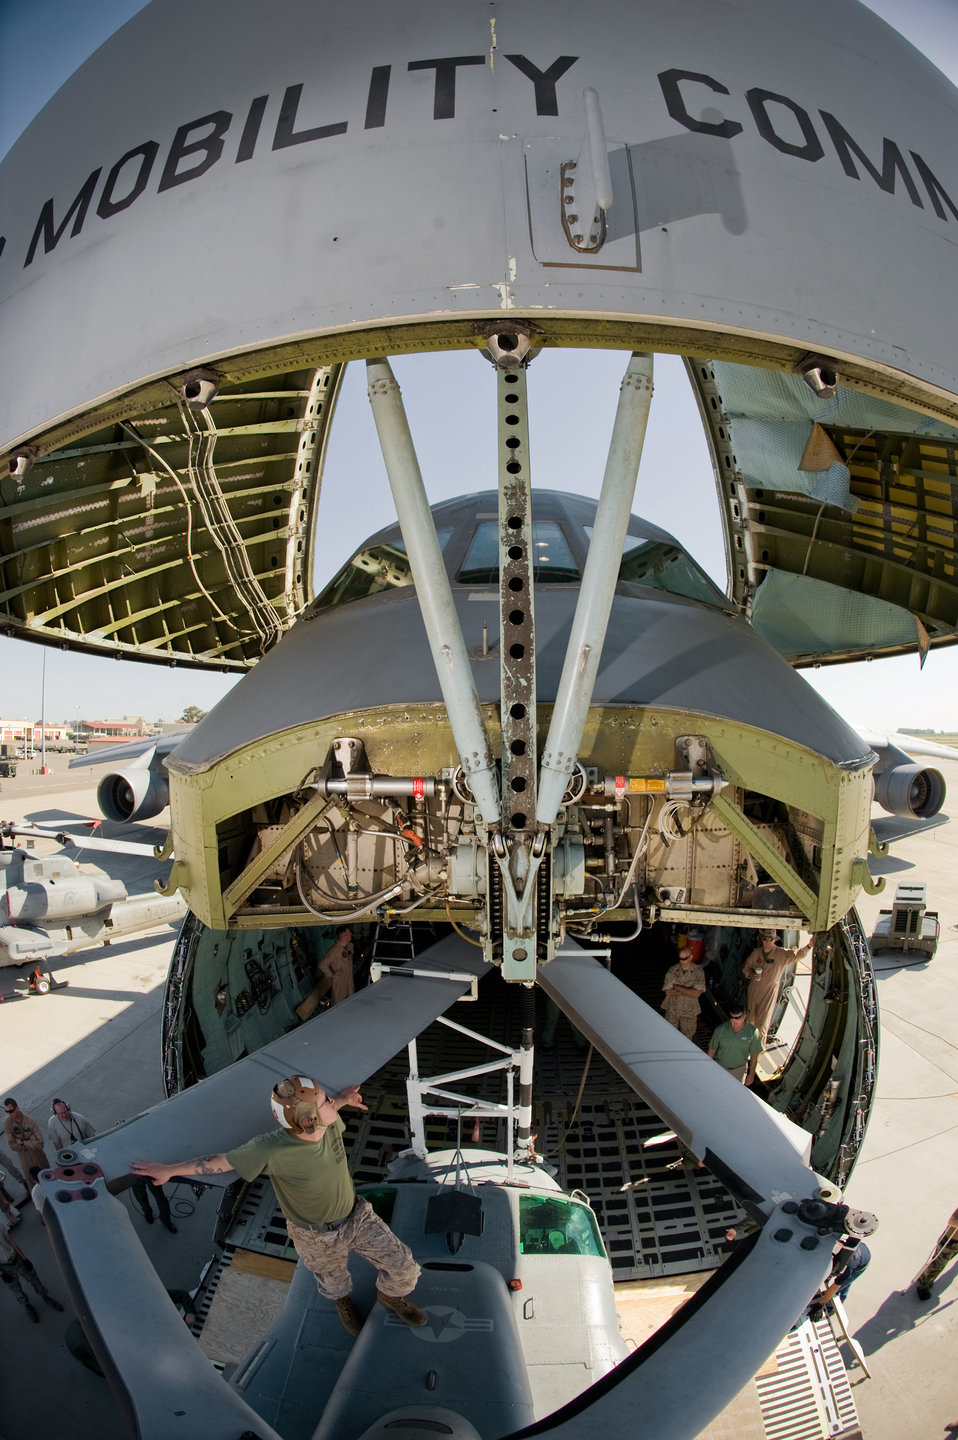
Open wide

Marine Sgt. Destin Waldron is the top-side spotter on a UH-1Y helicopter being loaded into a C-5C Galaxy at Travis Air Force Base, Calif. Airmen from Travis and Marines from Camp Pendleton, Calif., came together April 20 to determine how the helicopter could best fit into the cargo bay of the C-5.